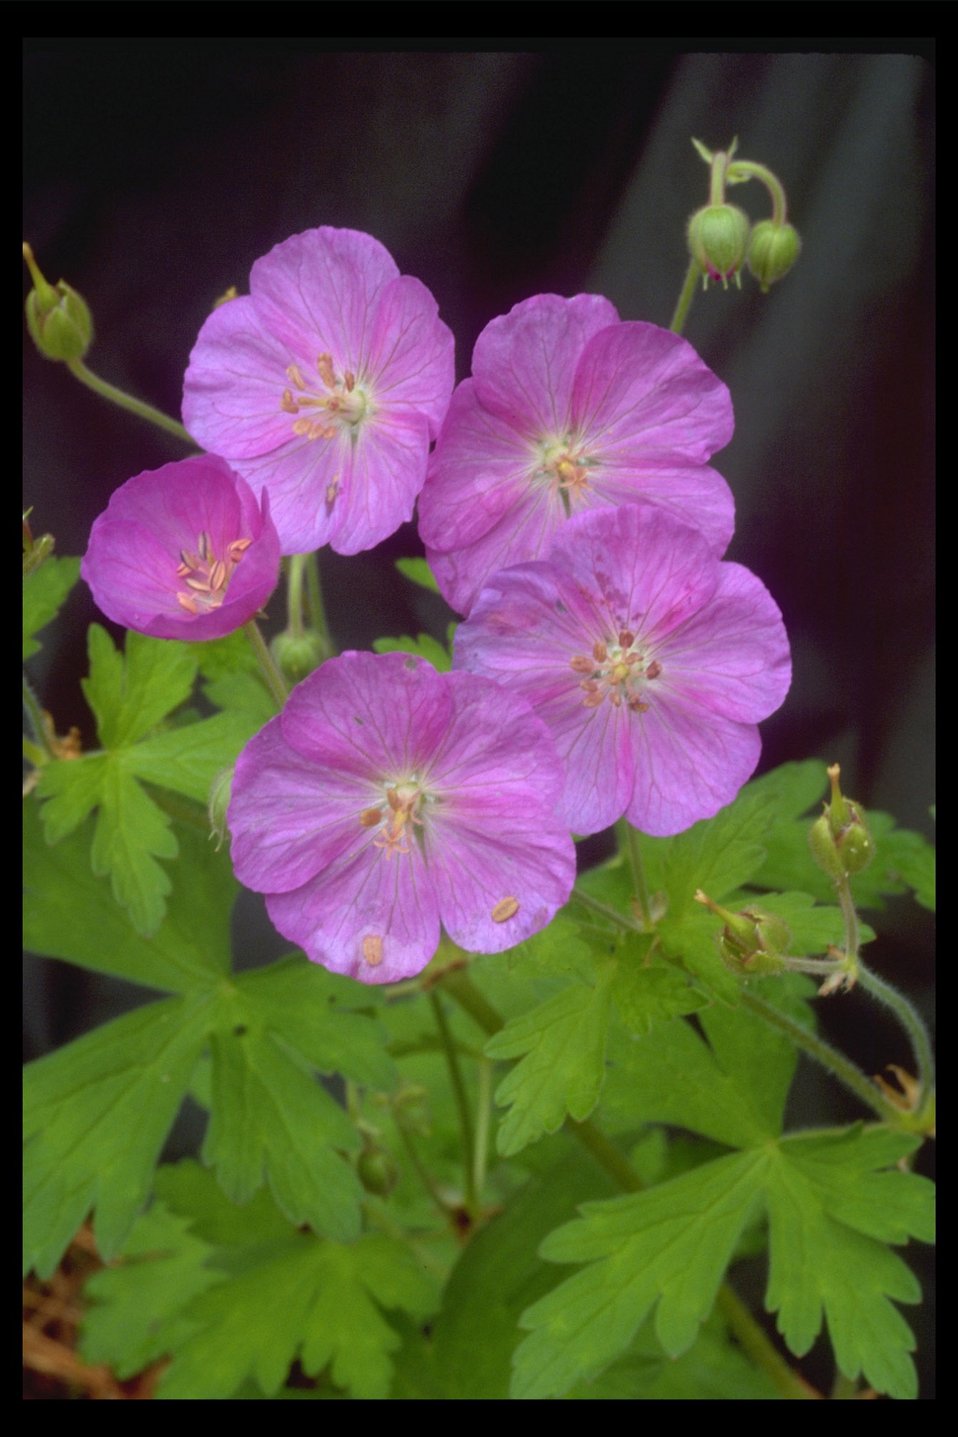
Cranesbill, also called Richardson's Geranium, (Geranium richardsonii) found along the West Fork Trail Creek.